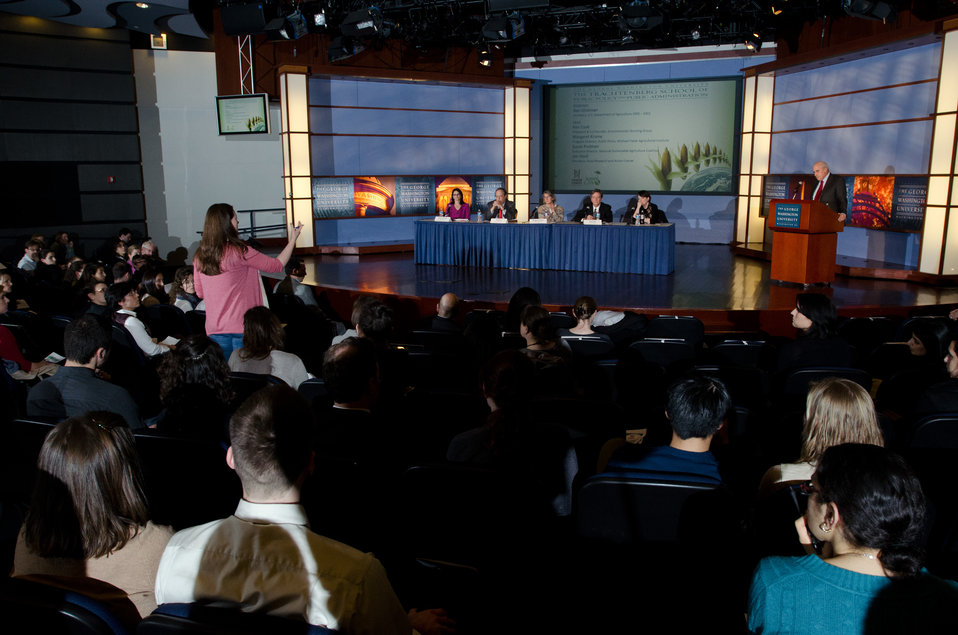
George Washington University Ph.D. candidate Michelle Jurkovich, asks a question about international food aid to the panelists (left to right) National Sustainable Agriculture Coalition Executive Director Susan Prolman, Food Research and Action Center President Jim Weill, Michael Fields Agricultural Institute Public Policy Program Director Margaret Krome, Environmental Working Group President and Co-Founder Ken Cook, Agriculture Deputy Secretary Kathleen Merrigan and Former Agriculture Secretary and moderator Dan Glickman at the “Shaping the Farm Bill for a Sustainable Future” Forum in the Jack Morton Auditorium, at the Trachtenberg School of Public Policy and Public Administration, on the George Washington University campus in Washington, D.C., on Thursday, March 1, 2012.